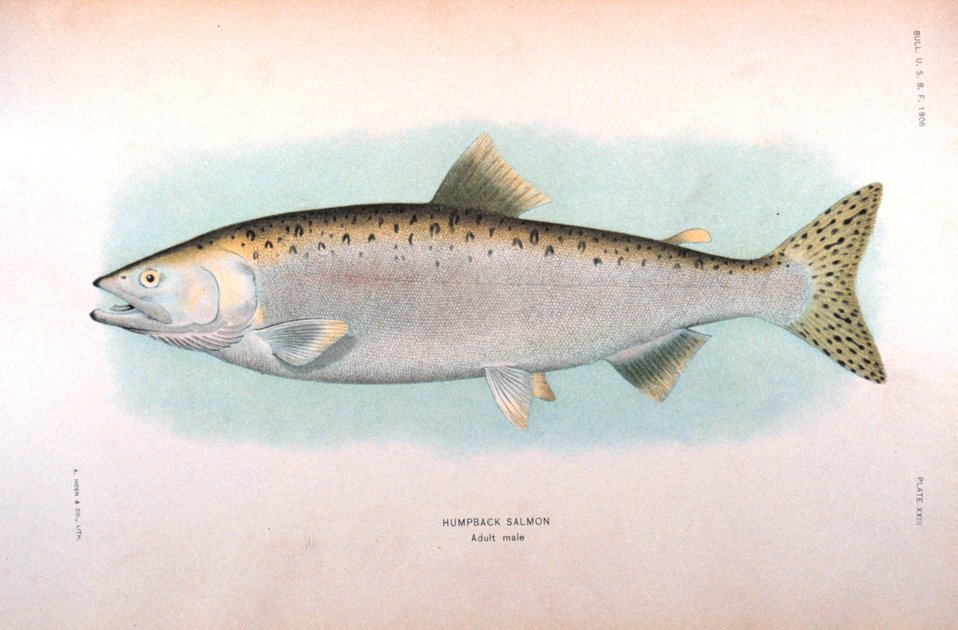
Humpback salmon, adult male. In: 'The Fishes of Alaska.' Bulletin of the Bureau of Fisheries, Vol. XXVI, 1906. P. 360, Plate XXIII.